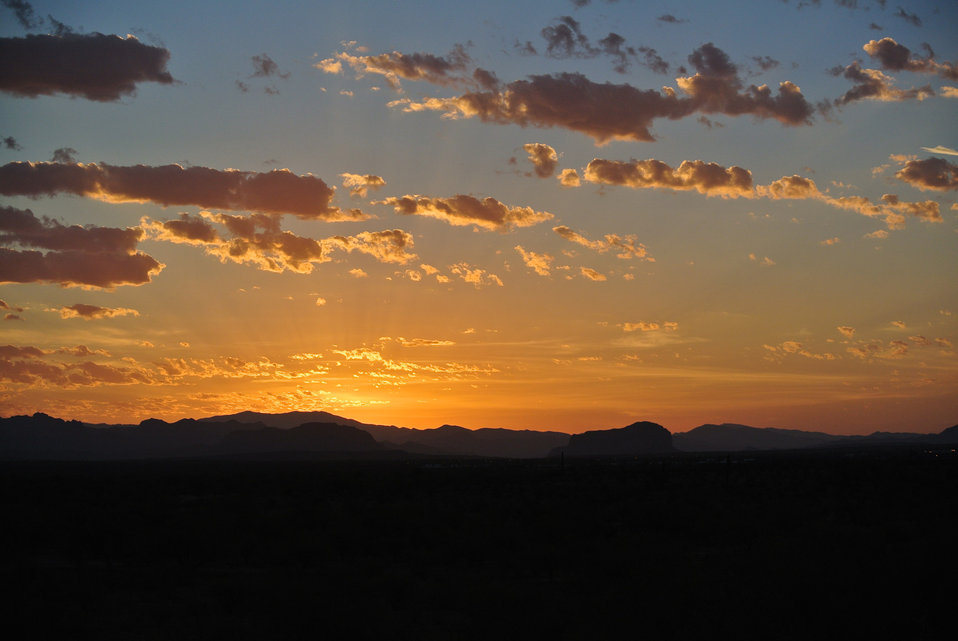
Sunrise 6-24-12 d

Sunrise 6-24-12.